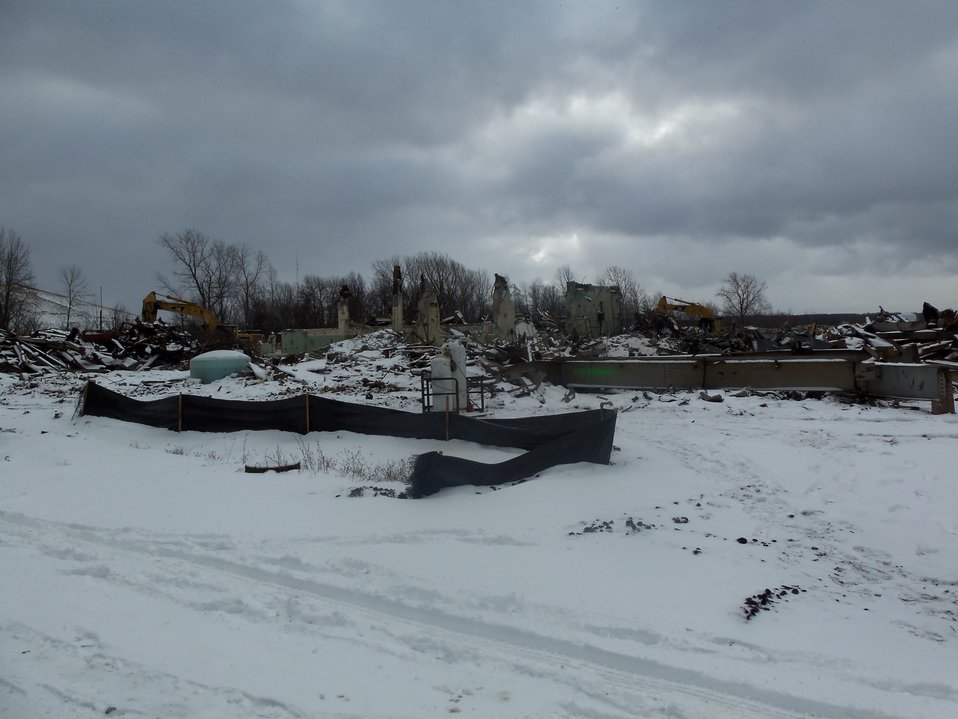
Building 401 debris and base of building.

Activities from the Niagara Falls Storage Site, which is associated with the former Lake Ontario Ordnance Works. Formerly Utilized Sites Remedial Action Program (FUSRAP), a program initiated in 1974 to identify, investigate and clean up or control sites that were part of the Nation's early atomic energy and weapons program. Activities at the sites that are eligible for FUSRAP were conducted by Manhattan Engineer District (MED) or the Atomic Energy Commission (AEC), both predecessors of the Department of Energy (DOE). The U.S. Army Corps of Engineers was assigned management of FUSRAP by Congress in 1997.